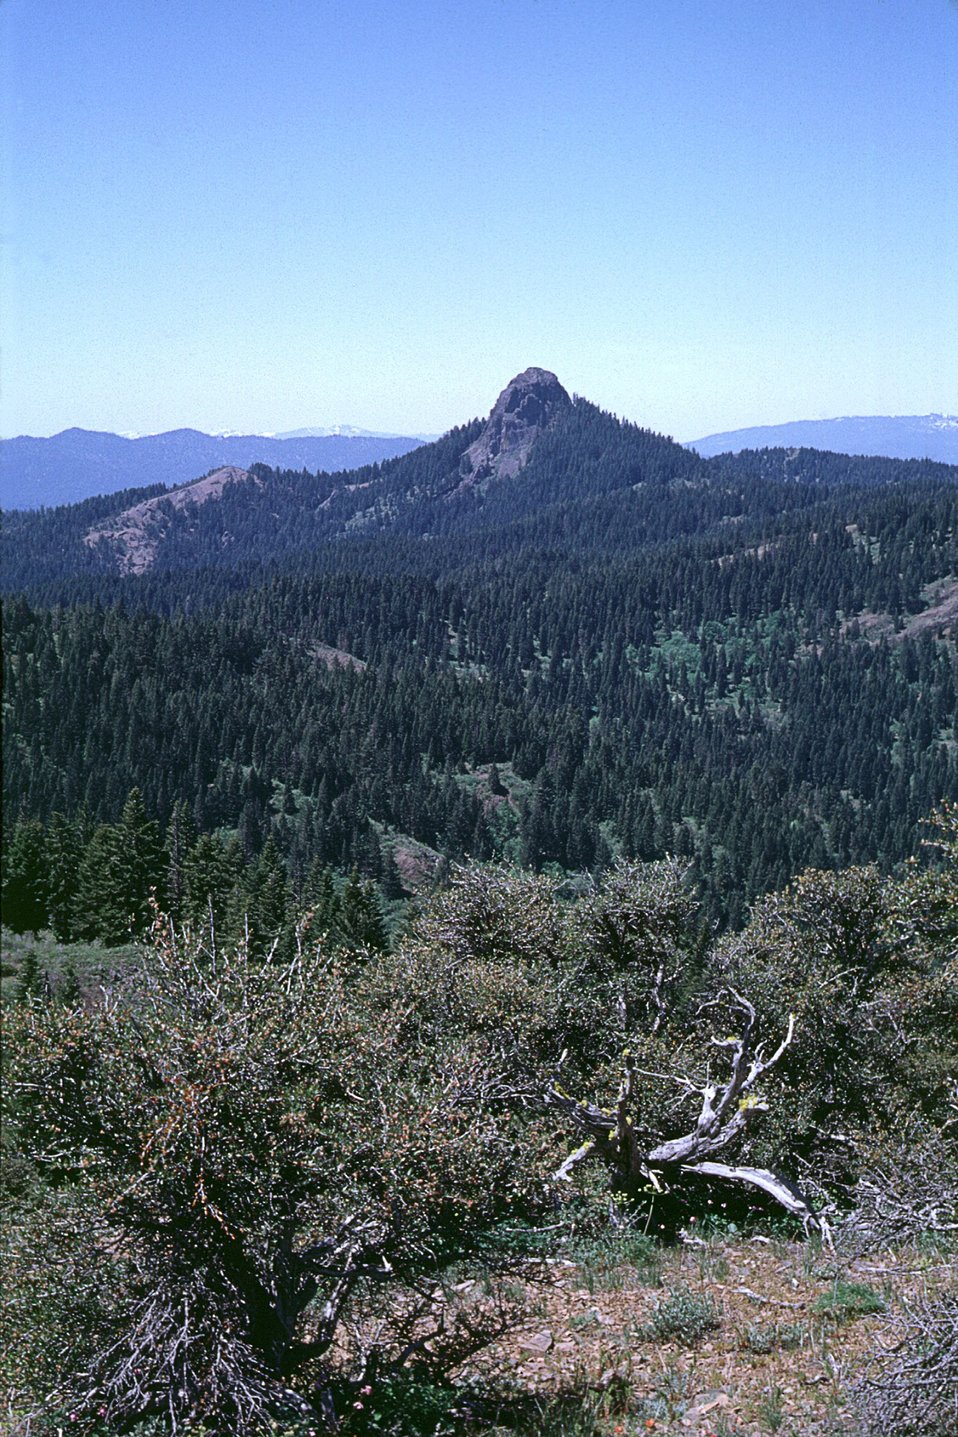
Pilot Rock